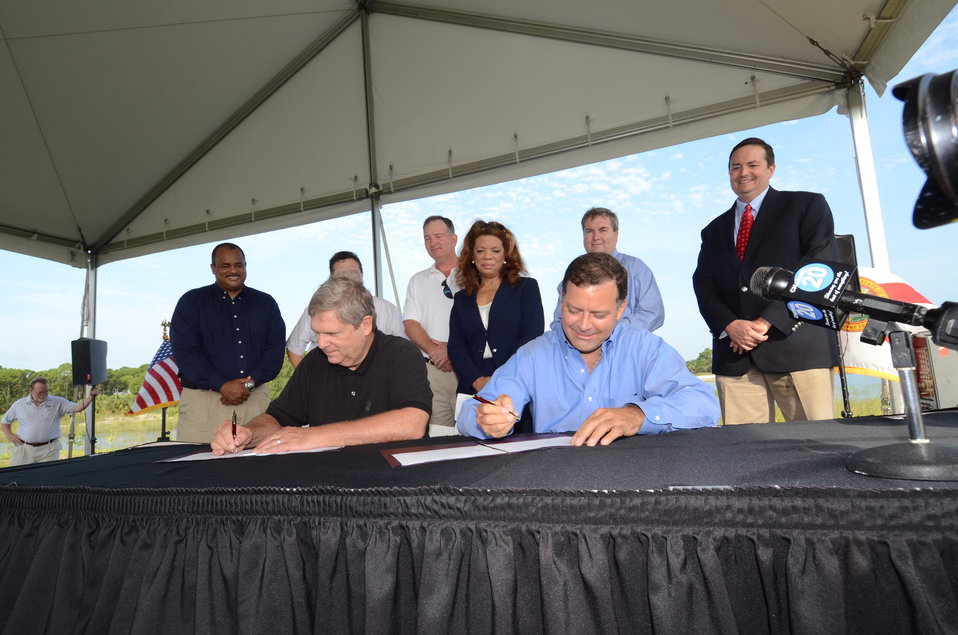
Agriculture Tom Vilsack participates in a signing ceremony in WEST PALM BEACH, Florida, August 11, 2011, with A.J. Suarez of Hendry County Nursery Farms-a landowner who will benefit from the $100 million in financial assistance to acquire permanent easements and assist with wetland restoration on nearly 24,000 acres of agricultural land in the Northern Everglades Watershed. Suarez signed an agreement with USDA to start the process to acquire the easement rights to 3,782 acres.